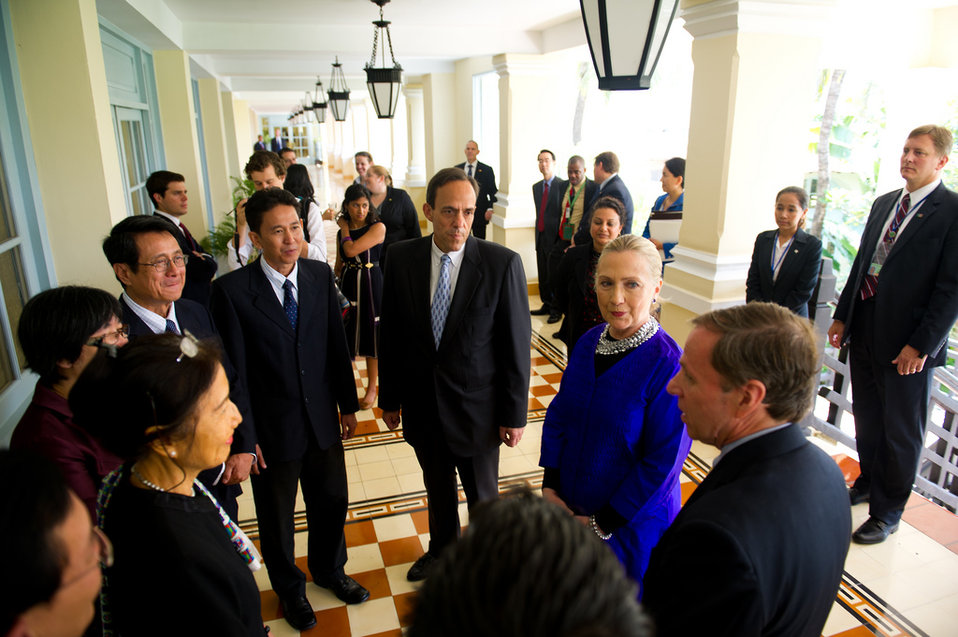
Secretary Clinton at the Human Rights Roundtable

U.S. Secretary of State Hillary Rodham Clinton, U.S. Ambassador to Cambodia William Todd, and Assistant Secretary for Democracy, Human Rights and Labor Michael Poster meet with participants of the Human Rights Roundtable in Siem Reap, Cambodia, on July 13, 2012.